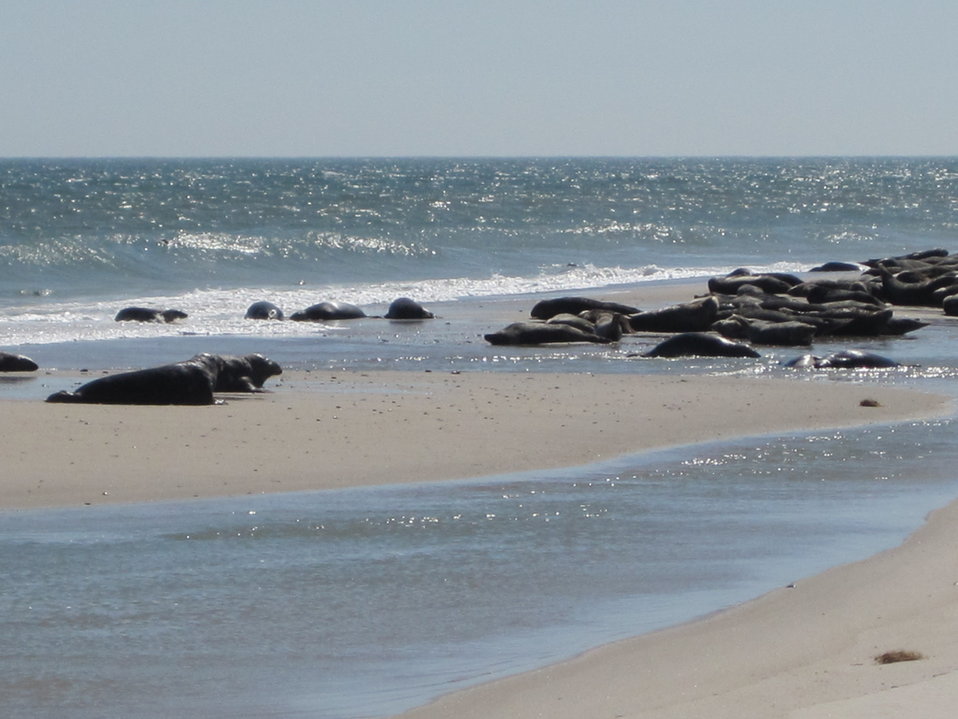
Seals on South Monomoy Island

Seals gather on South Monomoy Island, a few hundred yards from the lighthouse.

Credit: Keith Shannon/USFWS

Monomoy National Wildlife Refuge is part of the Eastern Massachusetts National Wildlife Refuge Complex.